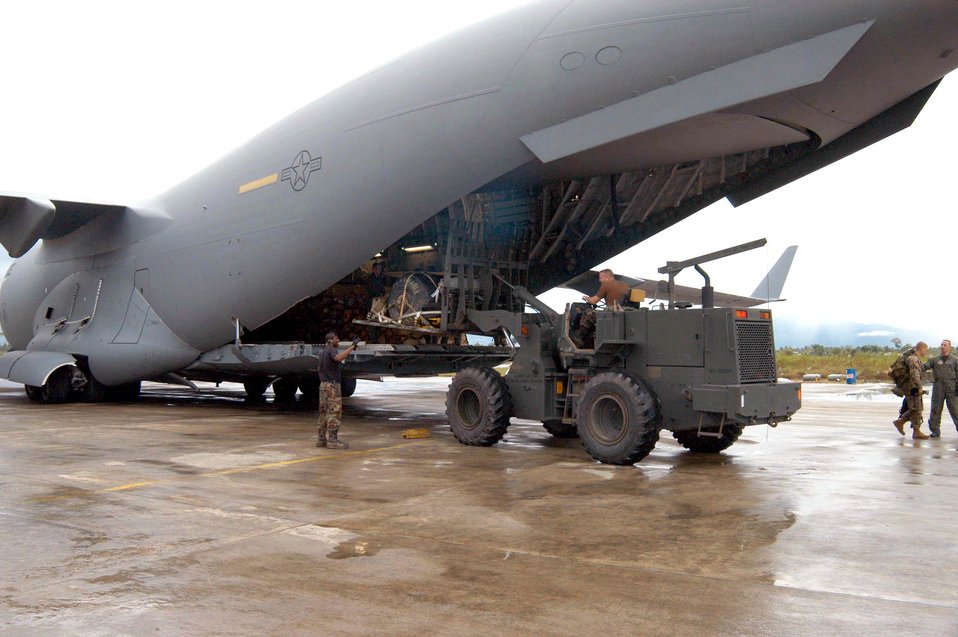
Airmen bring relief to tsunami-devastated region

BANDA ACEH, Indonesia (AFPN) -- A tanker airlift control element team uses an all- terrain forklift to unload pallets of cargo from a C-17 Globemaster III that flew here from Utapao, Thailand. The C-17 was flown by a crew from the 8th Airlift Squadron based at McChord Air Force Base, Wash.